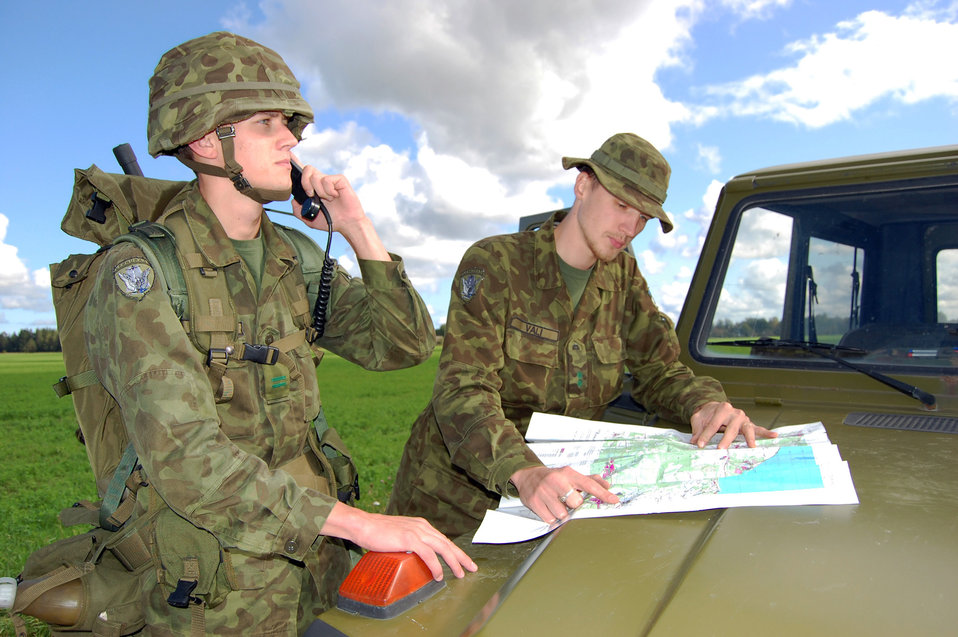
Lakenheath aircrews train with Estonian forward air controllers

Estonian air force forward air controllers Junior Sgt. David Mellov and 2nd Lt. Martin Vali participate in NATO's Baltic Region Training Event IV Alpha Sept. 16, 2009, near Tallinn, Estonia.